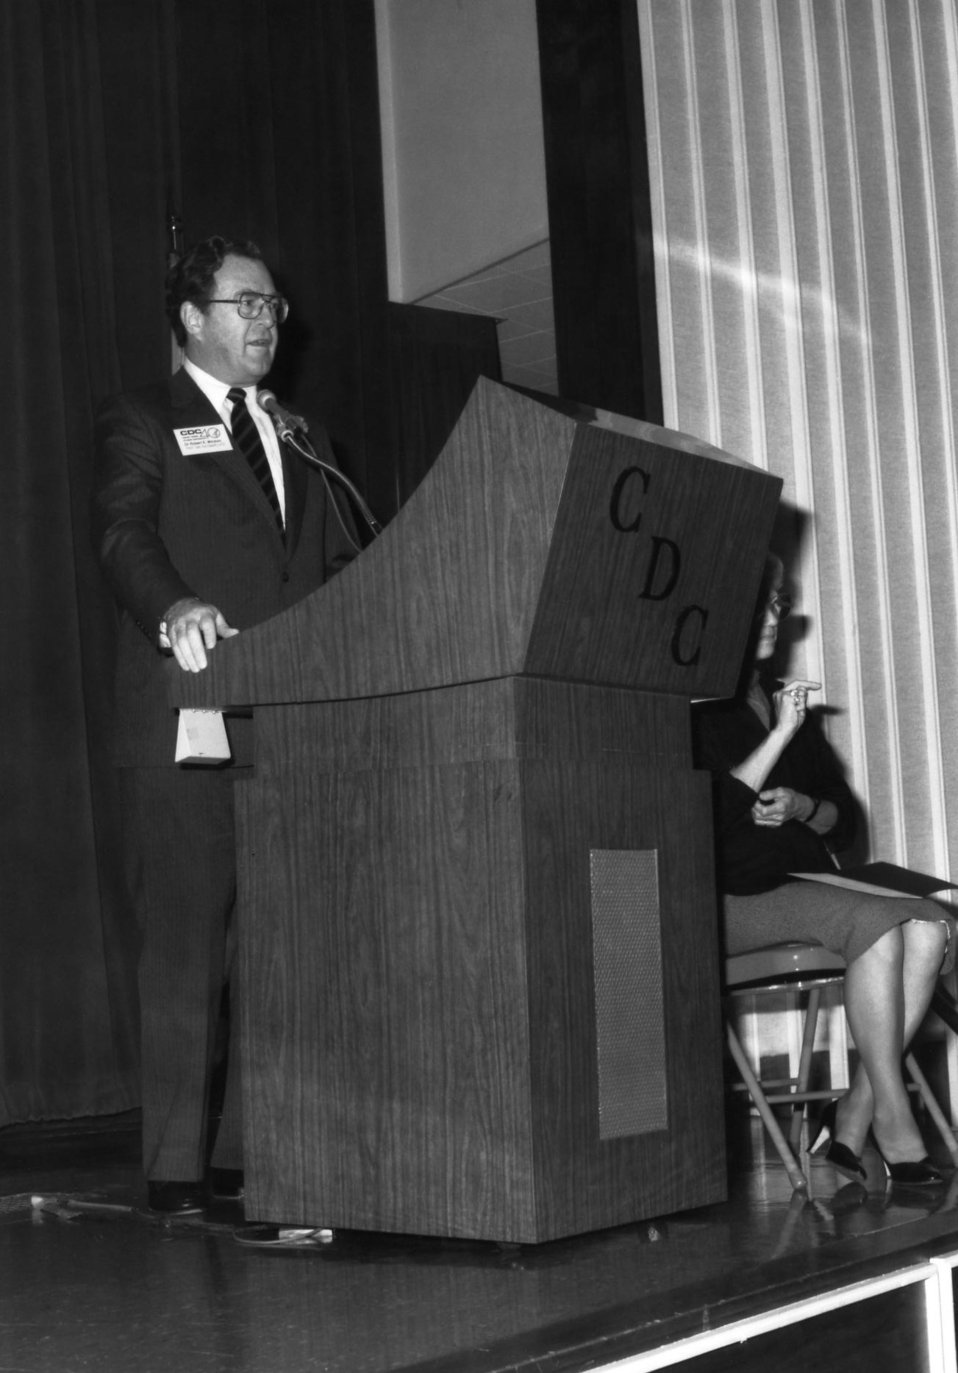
This photograph showed the former Assistant Secretary for Health, Robert E. Windom, M.D., speaking to Centers for Disease Control employees at the CDC's 40th anniversary ceremony.